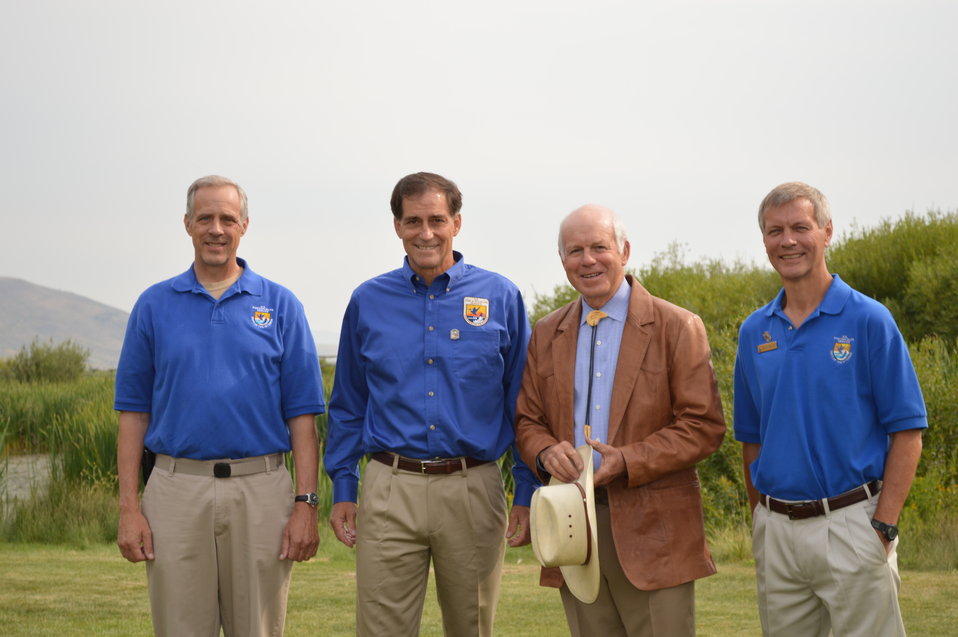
Several Speakers Gather Before the National Elk Refuge Centennial Ceremony

From left to right: USFWS Mountain-Prairie Regional Director Steve Guertin, USFWS Director Dan Ashe, former USFWS Director John Turner, and National Elk Refuge Manager Steve Kallin. The four posed for a photo prior to the National Elk Refuge's centennial ceremony on the morning of August 10, 2012.